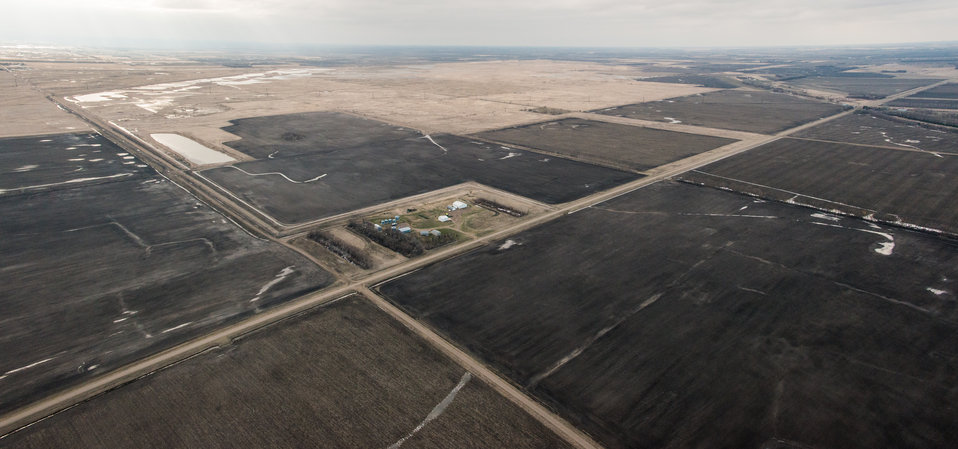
English Coulee Watershed Dam, a Public Law PL83-566 Small Watershed Program, in Grand Forks County, ND, on Tuesday, April 30, 2013. To learn about the Red River Basin Initiative, see www.mn.nrcs.usda.gov/news/features13/RRBI.html.